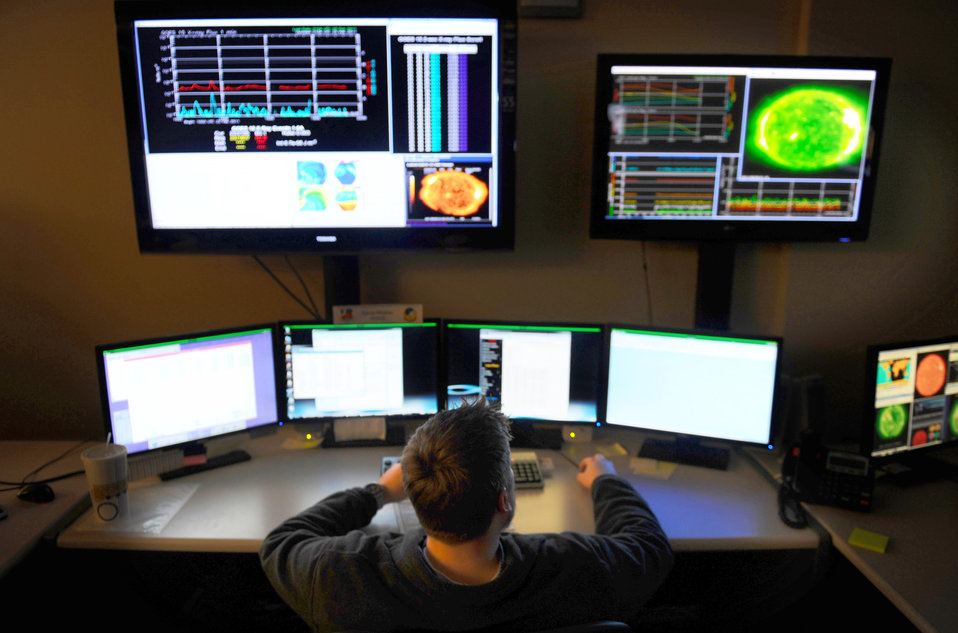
Space weather team readies for upcoming solar max

Chris Smith monitors the near earth space environment at the squadron's space weather operations center located inside the Air Force Weather Agency at Offutt Air Force Base, Neb. The 2nd WS is gearing up for the sun's next solar maximum. Mr. Smith is a forecaster with the 2nd Weather Squadron's space weather flight.